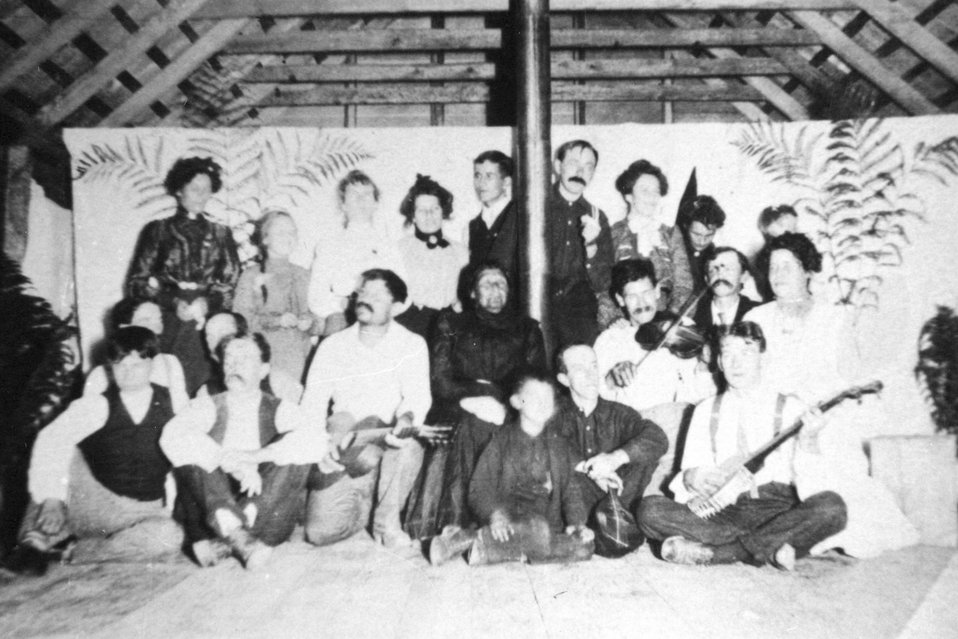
Dance at Mule Creek upstairs in the Tabernacle.